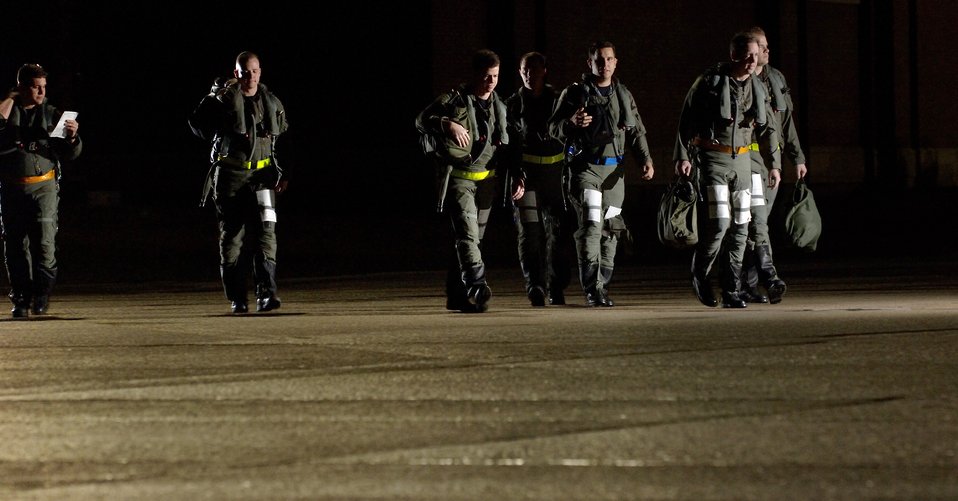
Phase 1 ORE

LANGLEY AIR FORCE BASE, Va. (AFPN) -- F-22A Raptor pilots walk to their jets during the base's Phase 1 operational readiness exercise here Feb. 3. The Phase 1 ORE is an evaluation of the base's ability to prepare and deploy personnel, equipment and support assets to a combat environment.